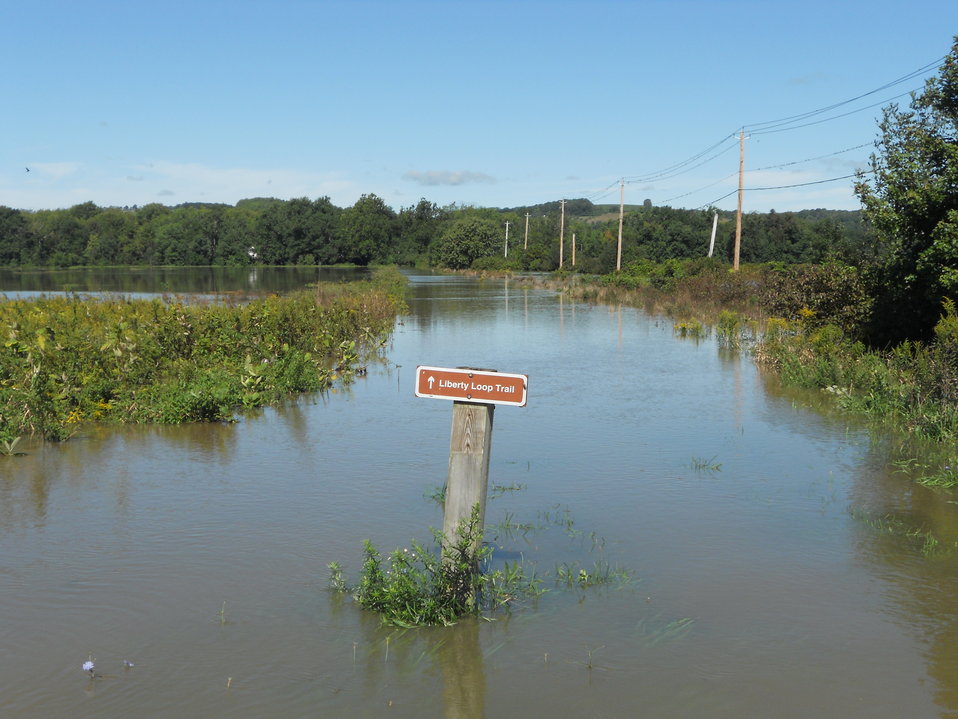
Hurricane Damage at Wallkill River National Wildlife Refuge August 30, 2011

Flooding at Liberty Loop Trail and impoundments, Sussex, NJ.